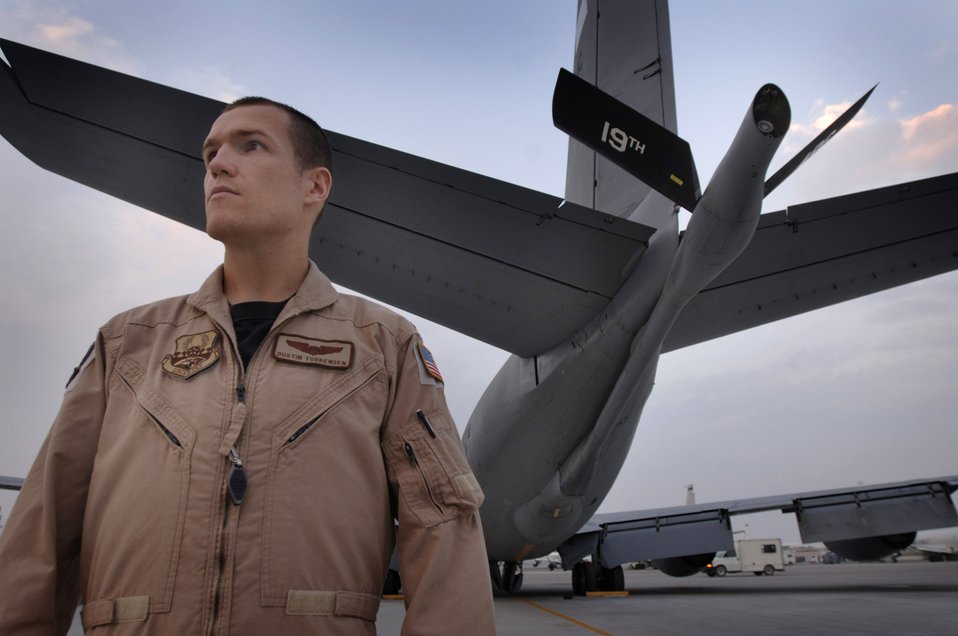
Sibling tanker pilots connect 7,700 miles from home

First Lt. Dustin Torbensen prepares to fly an air refueling mission on board a KC-135 Stratotanker in support of Operation Iraqi Freedom Nov. 25 over Iraq. Lieutenant Torbensen is deployed from Grand Forks Air Force Base, N.D., to Southwest Asia for a two-month rotation with the 379th Air Expeditionary Refueling Wing.